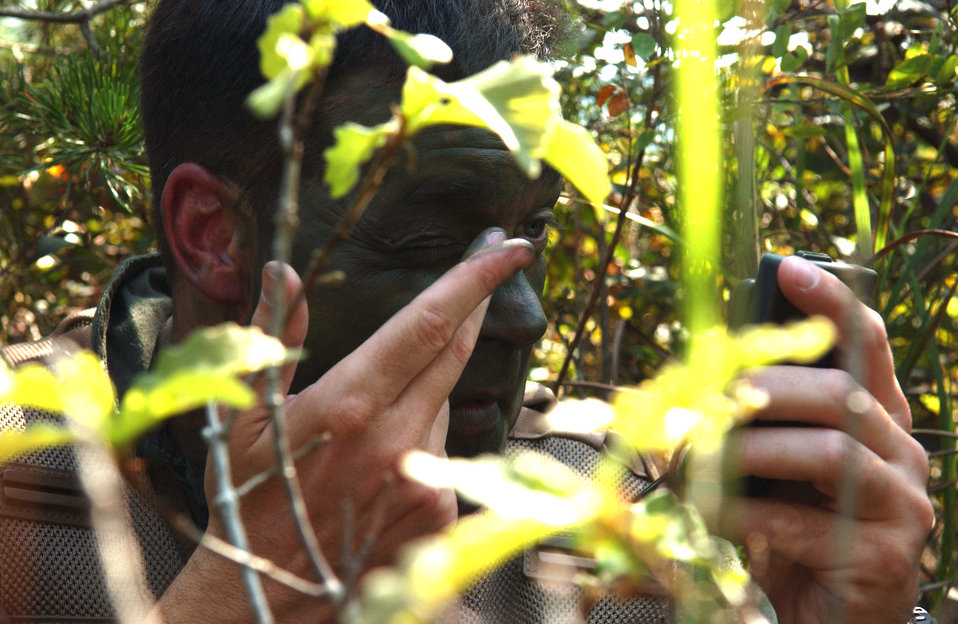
Life-saving training at Osan AB

Maj. Paul Neidhardt applies camouflage paint during combat search and rescue training Sept. 21 near Osan Air Base, South Korea. Annual training is conducted by survival, evasion, resistance and escape instructors to reacquaint aircrew members with combat search and rescue procedures and techniques. Major Neidhardt is with the 25th Fighter Squadron at Osan AB.